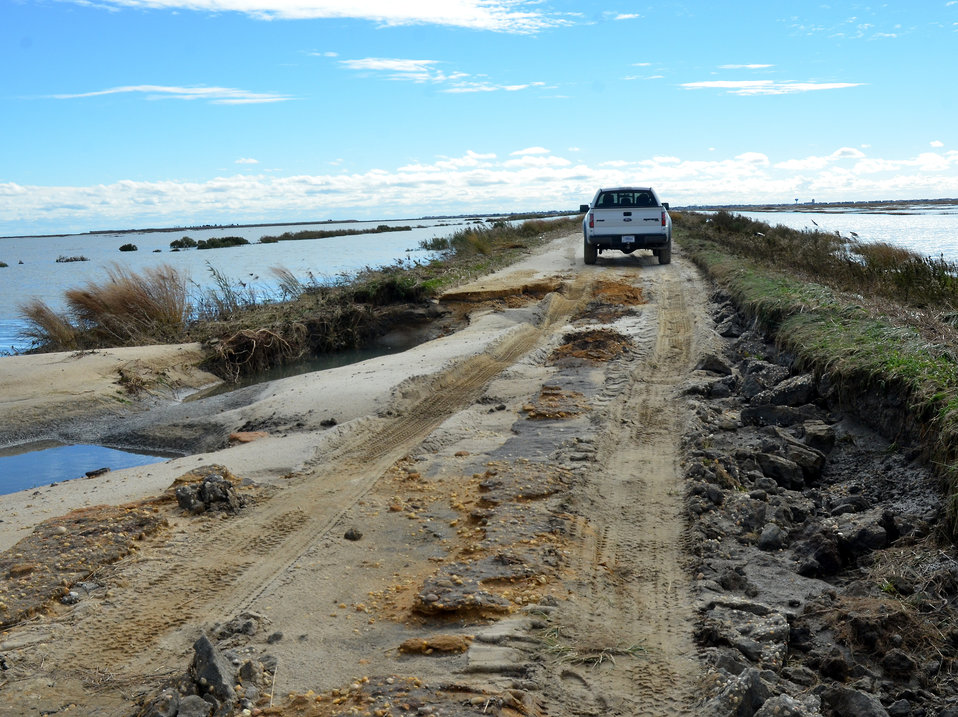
Effects of Hurricane Sandy at Edwin B. Forsythe National Wildlife Refuge. (NJ)

Large areas of the south dike facing the east pool at Edwin B. Forsythe National Wildlife Refuge are severely eroded after Hurricane Sandy.